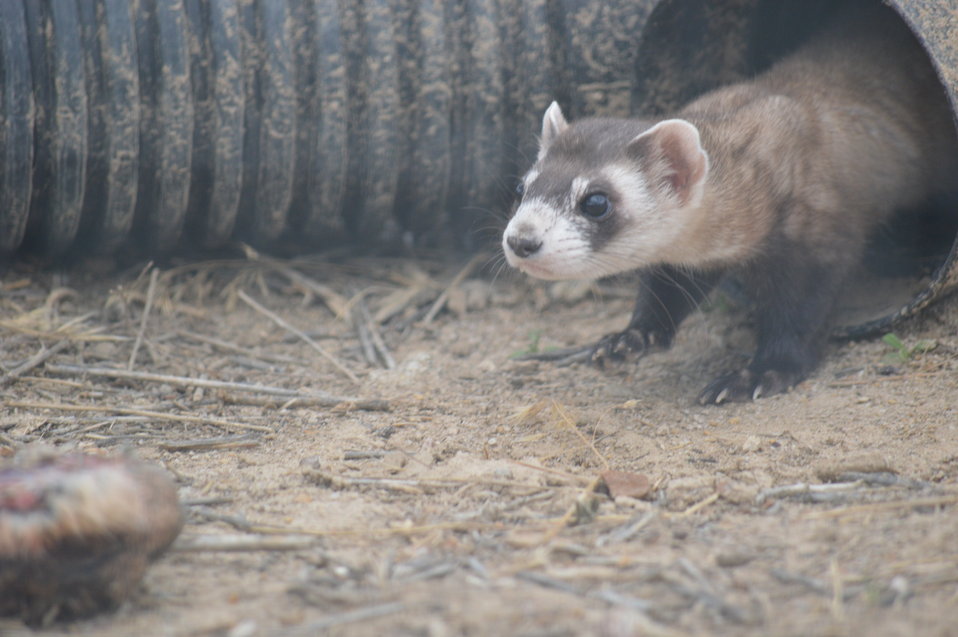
Interns visit the NBFFCC

In the summer of 2012, USFWS Region 6 interns visited the National Black-footed Ferret Conservation Center (NBFFCC) in Colorado to learn how the program reintroduces the endangered Black-footed ferret back into its native habitat.